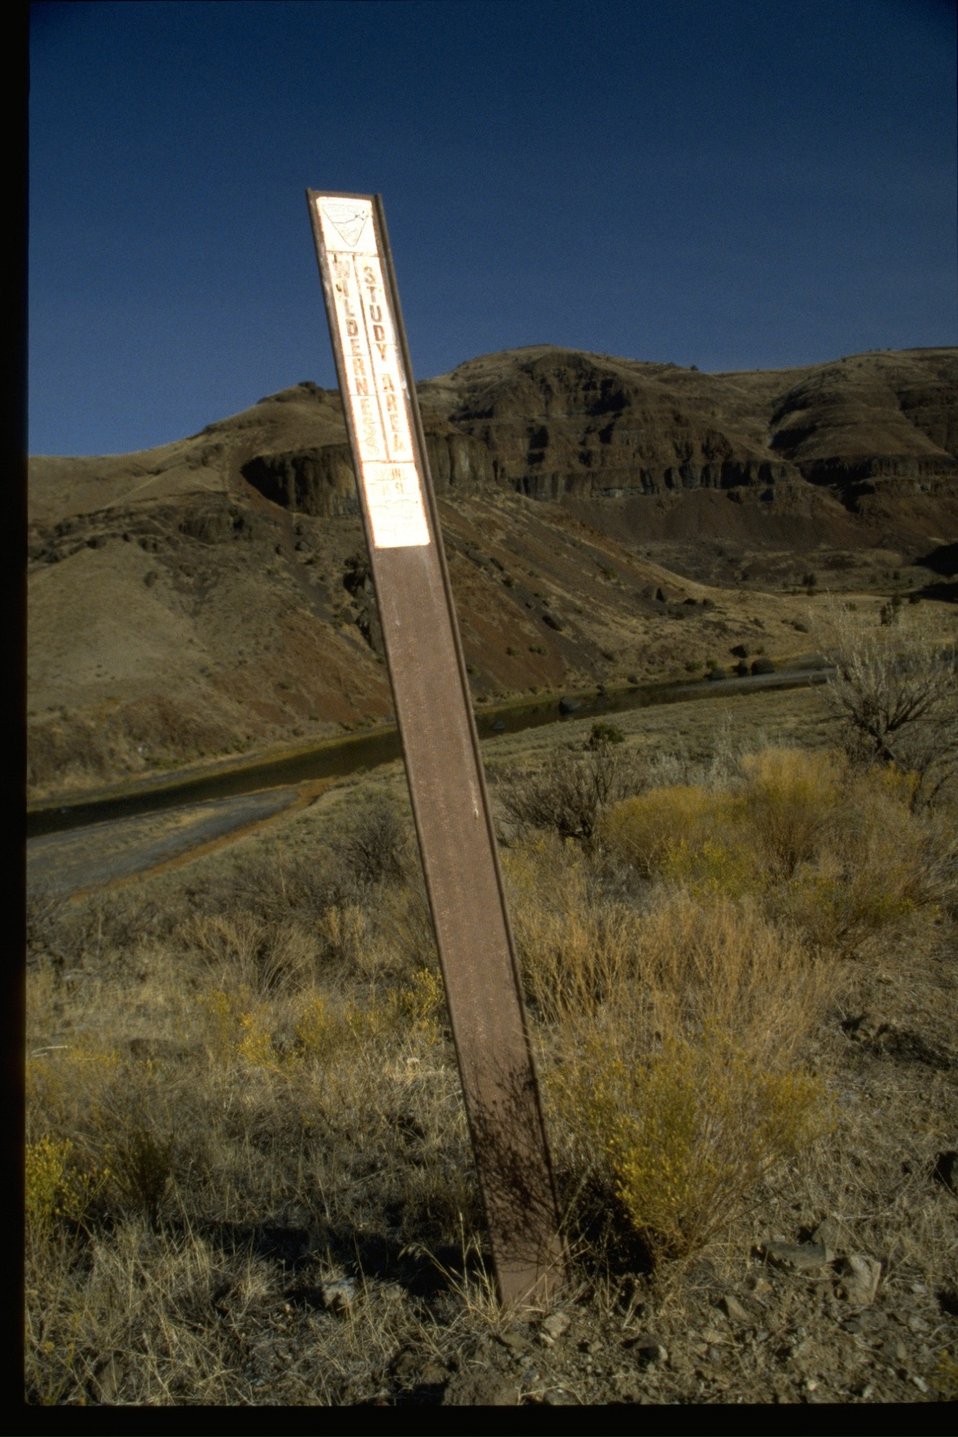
Carsinite sign designating a Wilderness Study Area with the John Day River and basalt cliffs in the background.